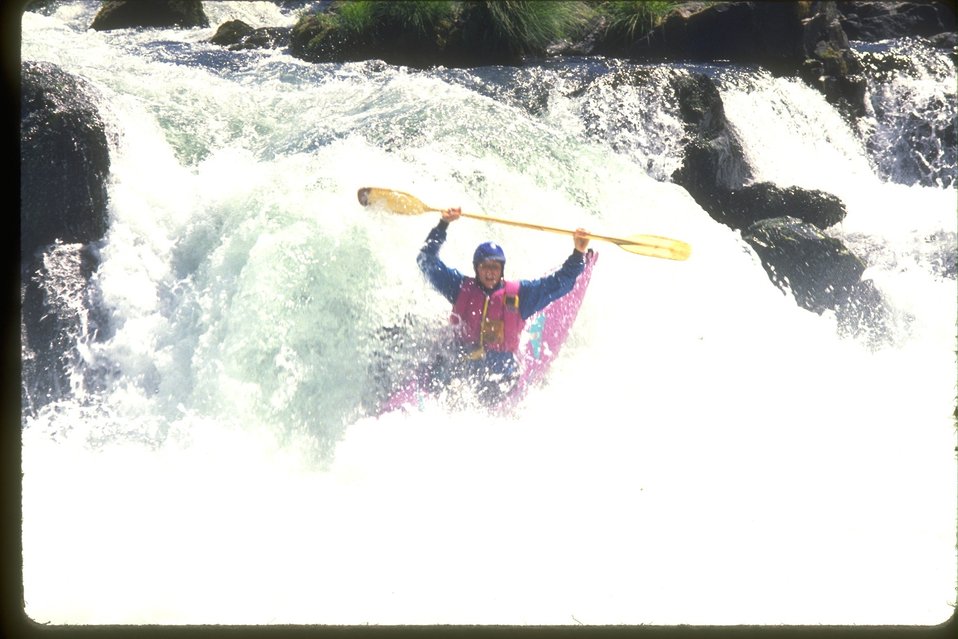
Kayaking on the North Umpqua River.